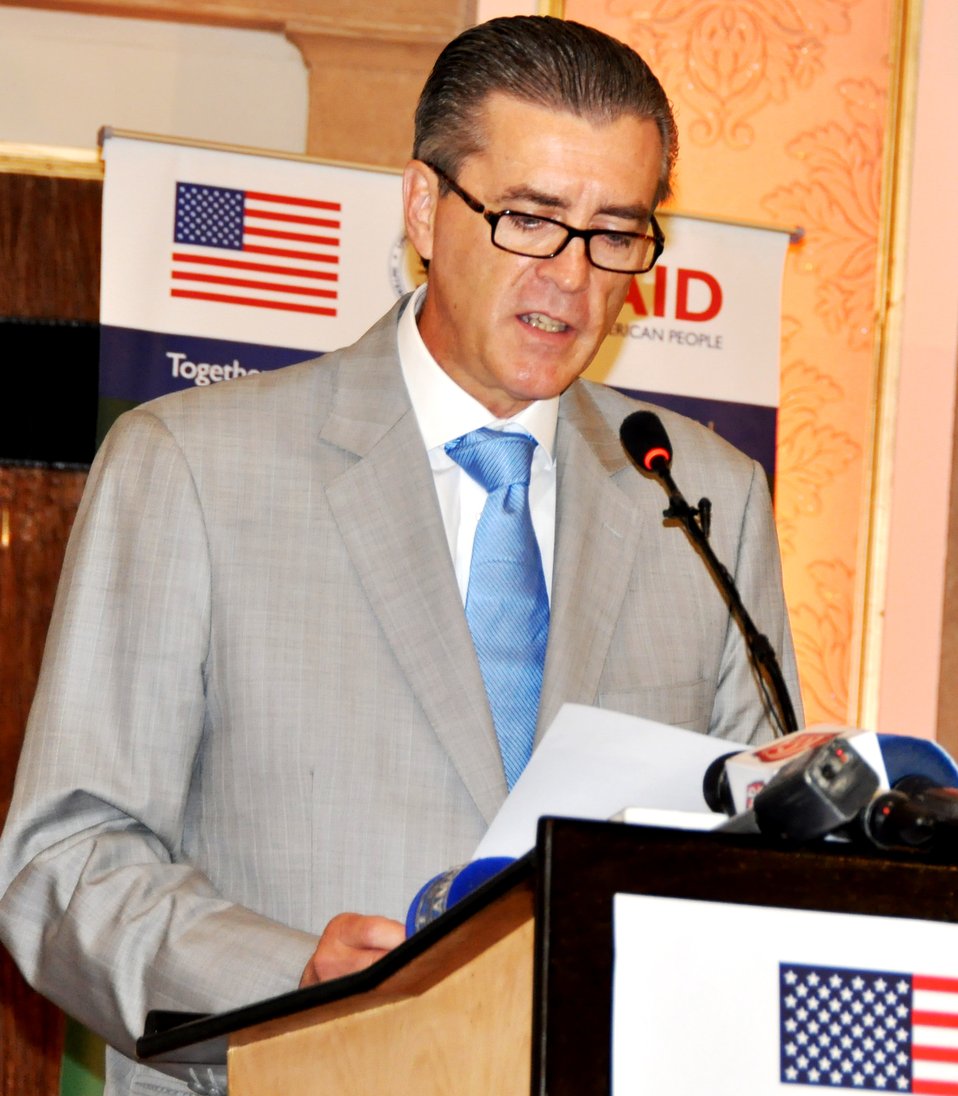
Mango Conference

Ambassador Olson addressing the conference